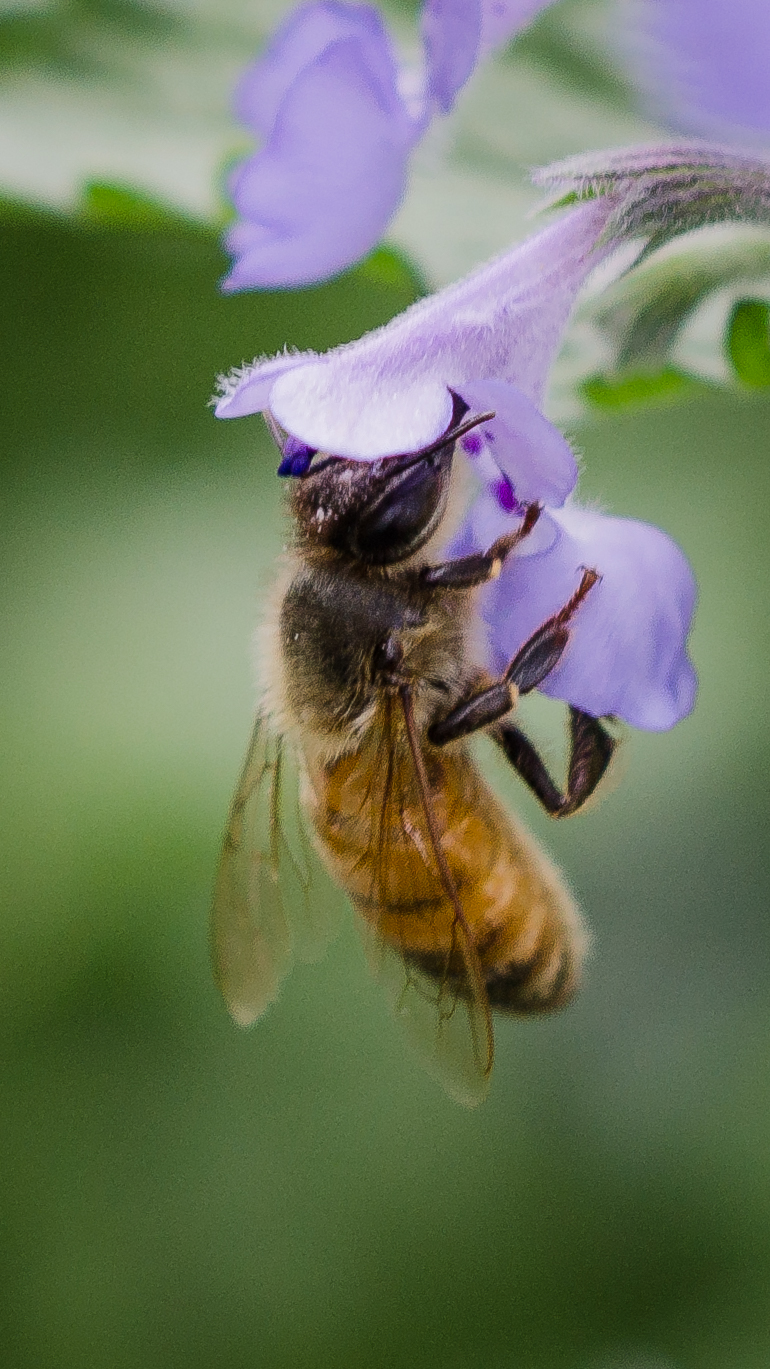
A honey bee is attracted to flowers in the U.S. Department of Agriculture People's Garden, pollinator garden, outside the headquarters' Whitten Building in Washington, D.C., on Tuesday, May 21, 2013.This flower attracts bees because it provides nectar that will be brought to the hive for food. Nearby plants have pollen that other bees will gather on their legs to bring back to the hive for food. The activity of gathering from many flowers before returning moves pollen from plant to plant. Bees provide one of the several types pollination methods.